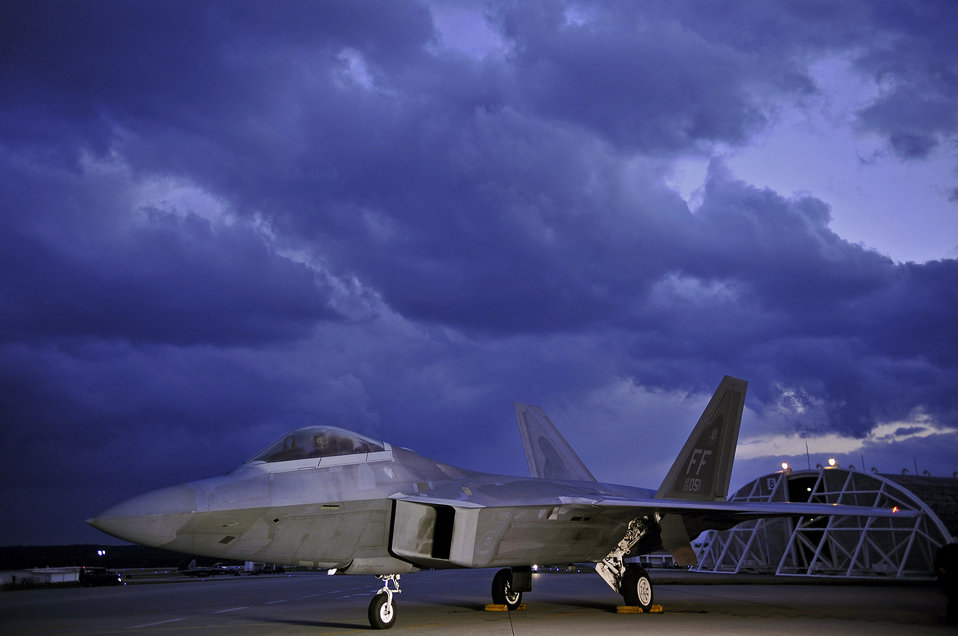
Ready to fly

F-22 Raptor pilot, Capt. Brandon Zeurcher, performs pre-flight functions Jan. 14 on the runway at Kadena Air Base, Japan. Six F-22s arrived Jan. 10 as part of a three-month deployment in support of U.S. Pacific Command's security obligations in the region.